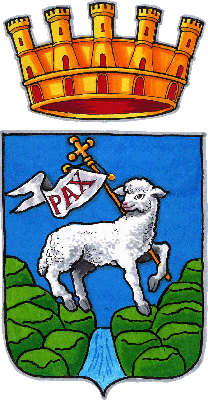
myself